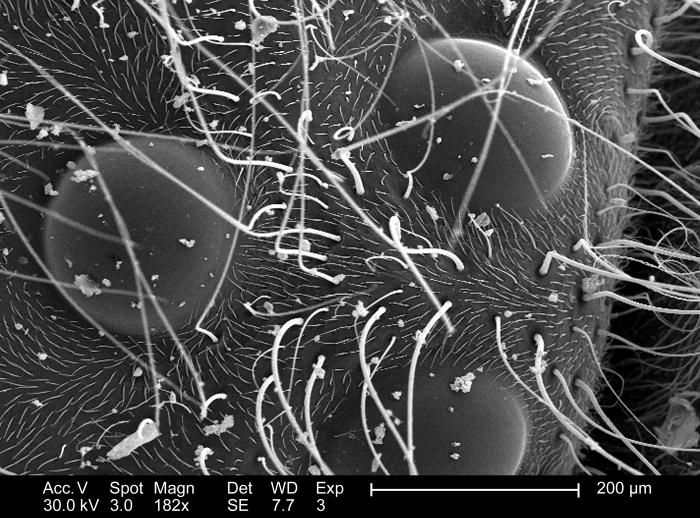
From a superior view, this scanning electron micrograph (SEM) depicted the triangular grouping of three ocelli, or simple eyes on the vertex of a Western honeybee's, Apis mellifera, head, or cephalic region; Magnified 182x.